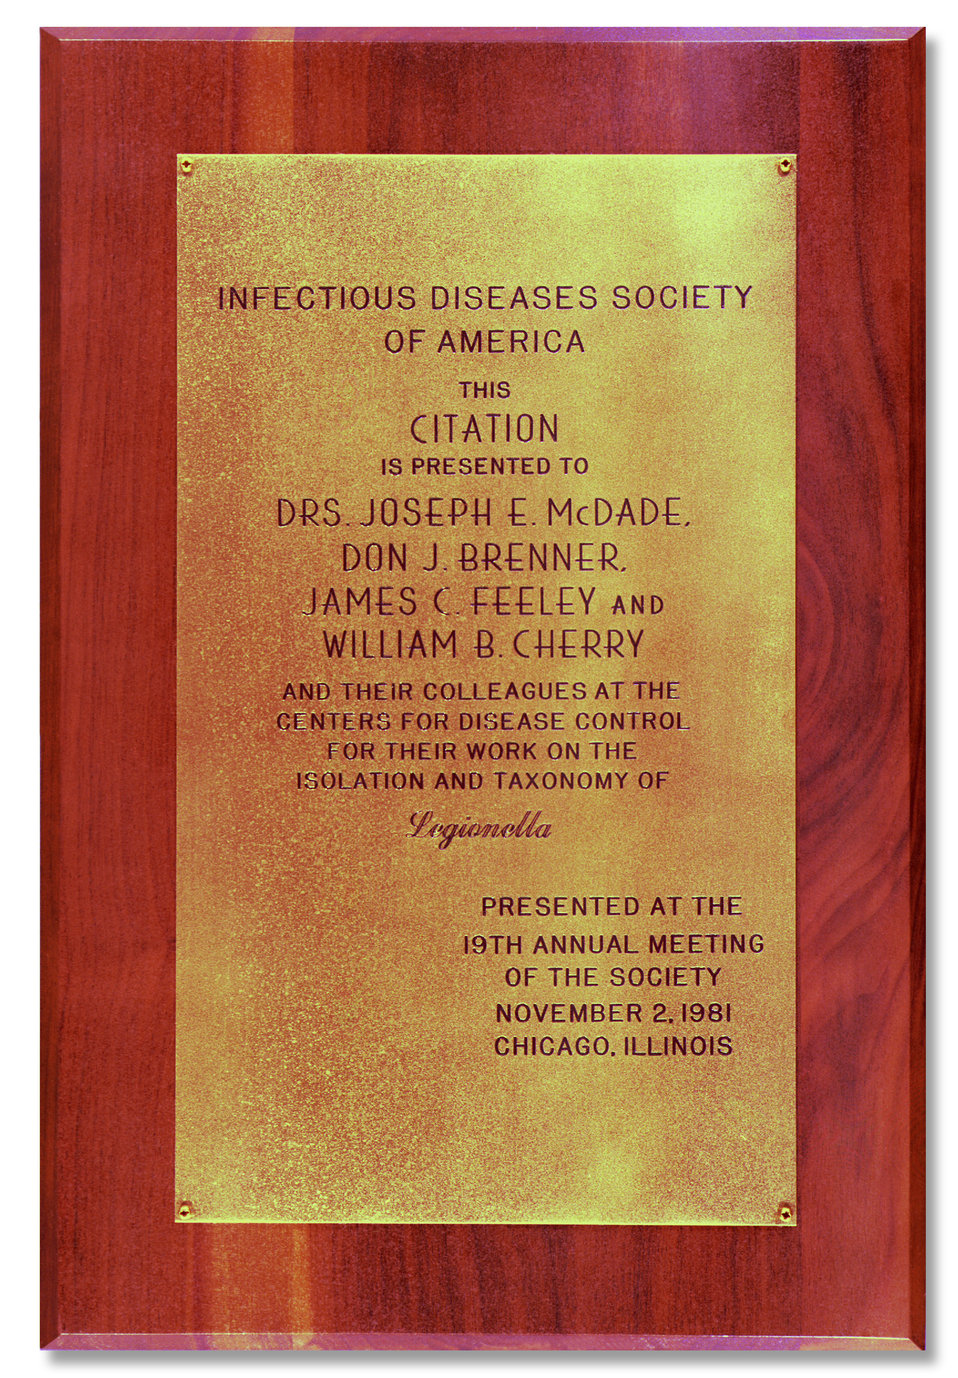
This plaque was presented to members of the CDC for their work on the taxonomy and isolation of Legionella pneumophilia.